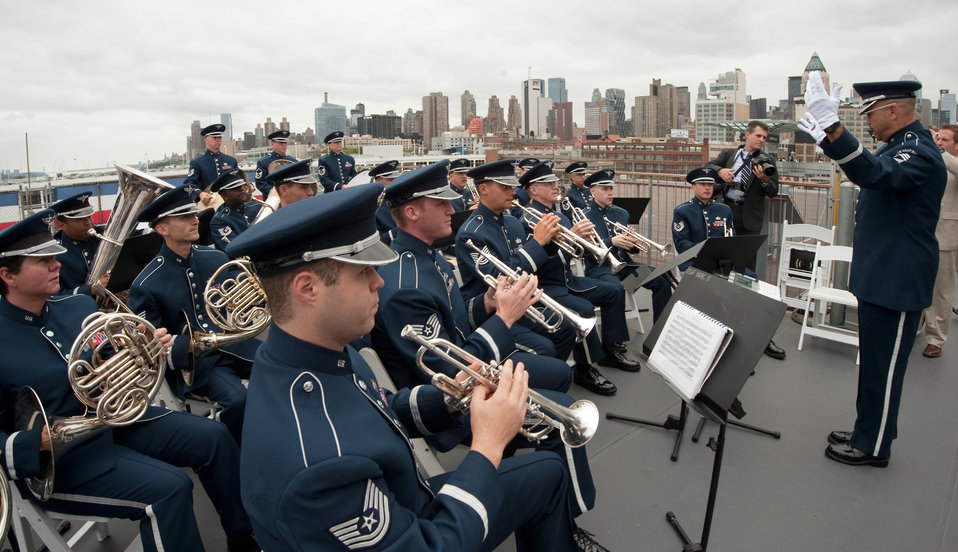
Opening ceremony for Air Force Week

The Air Force Band performed during the Air Force Week New York City proclamation ceremony Aug. 24, 2010, on the flight deck of the USS Intrepid Sea, Air and Space Museum.